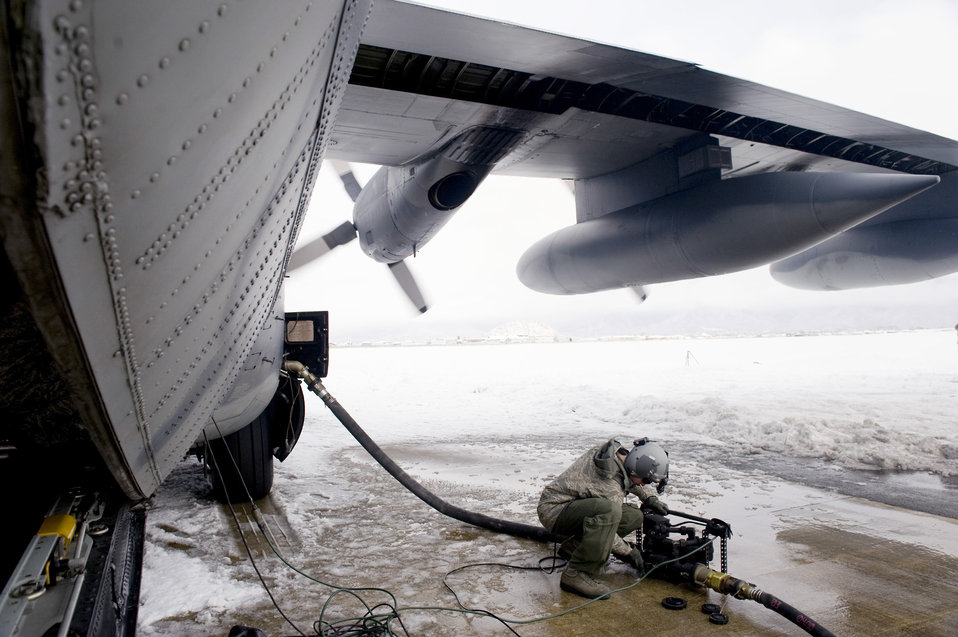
FARP ready at Yamagata Airport

Staff Sgt. Nicholas Wisnoski, 17th Special Operations Squadron loadmaster, turns off a defueling pump for an MC-130P Combat Shadow March 17, 2011, at Yamagata Airport, Japan, during efforts to establish a forward area refueling point there. FARPs allow aircraft to operate at further distances by allowing the aircraft to refuel where no fuel typically exists. The fuel at Yamagata Airport will be used for American search-and-recovery teams during Japan's earthquake and tsunami relief. Sergeant Wisnoski is with the 17th Special Operations Squadron at Kadena Air Base, Japan.